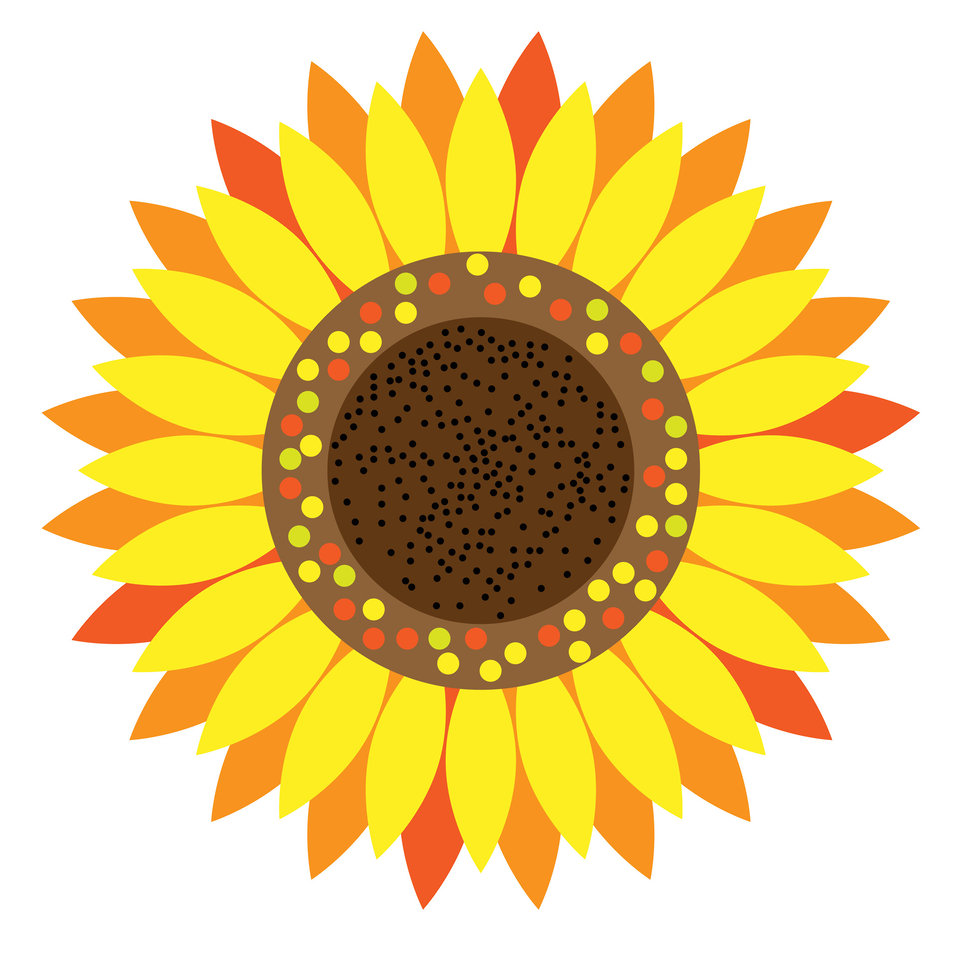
Sunflower floral clipart

Sunflower bright colorful orange yellow flower clipart for scrapbooking.